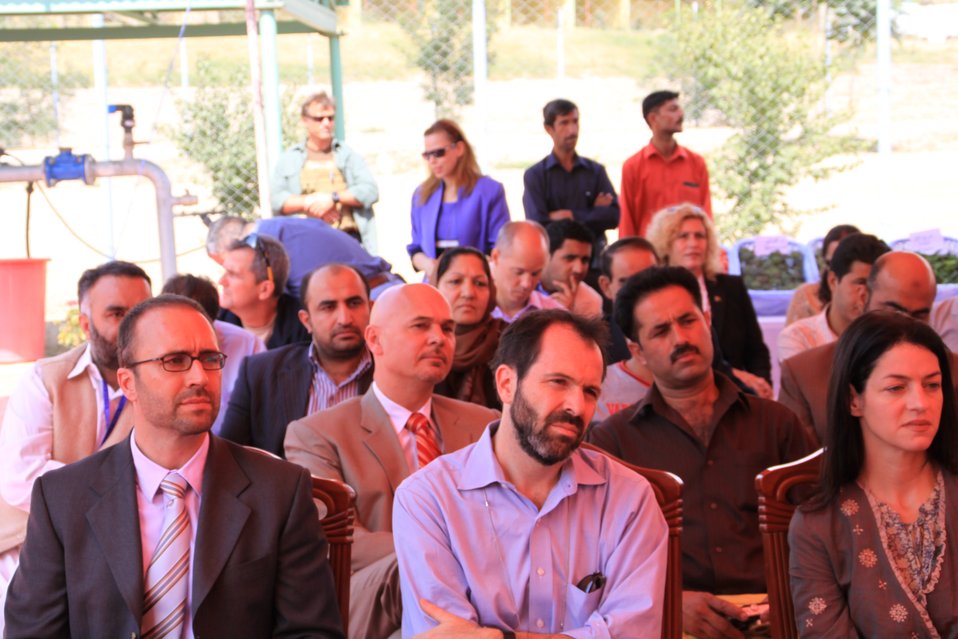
Baddam Bagh Farm